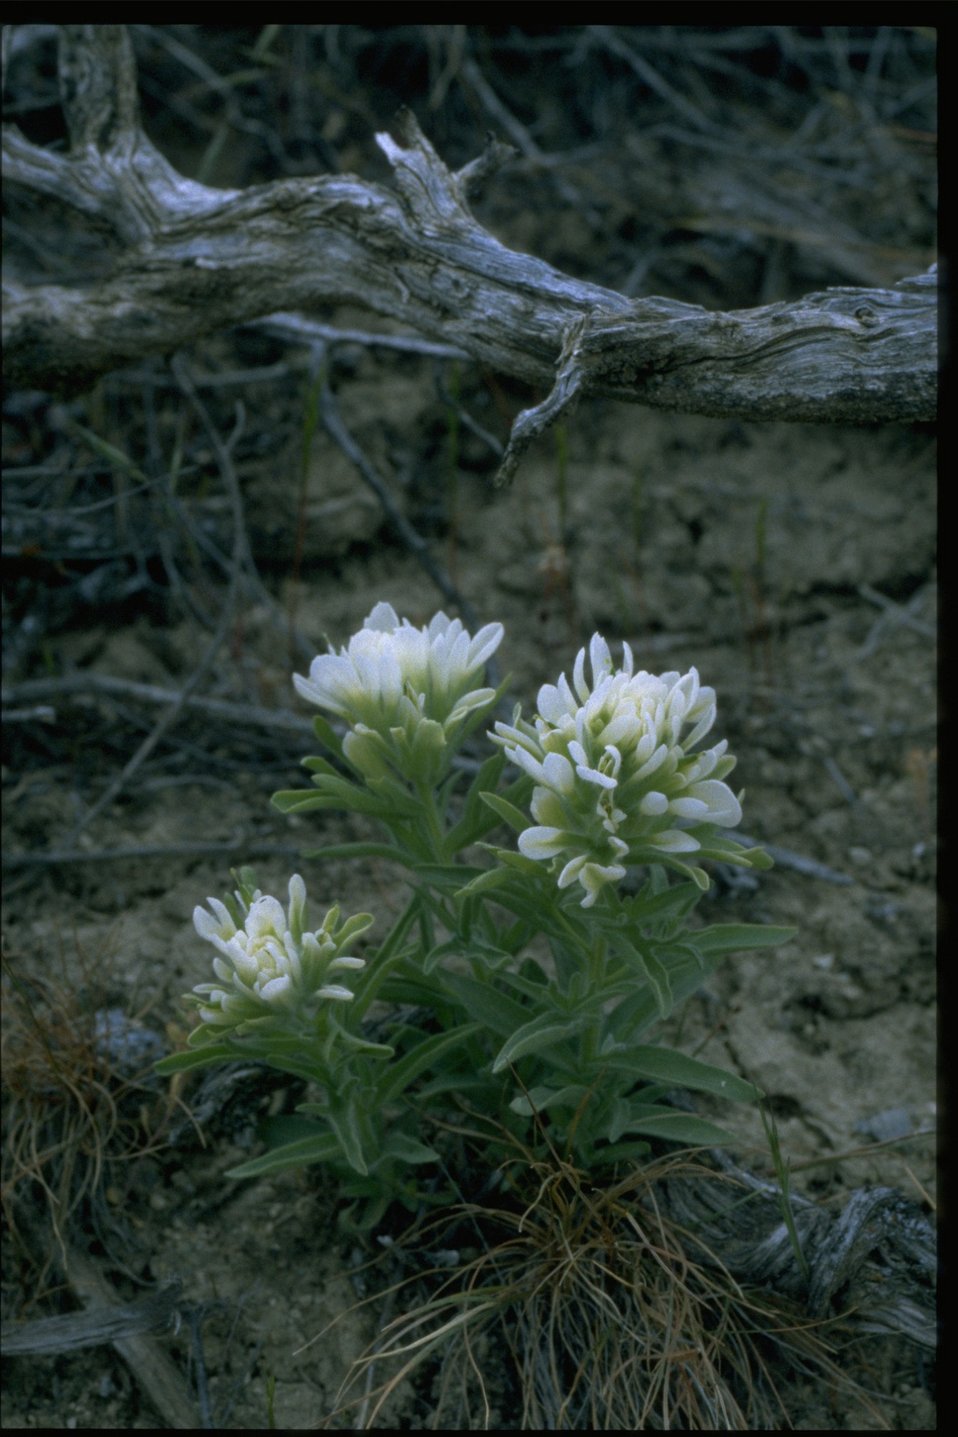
Medium shot of Sand Lily wildflowers.